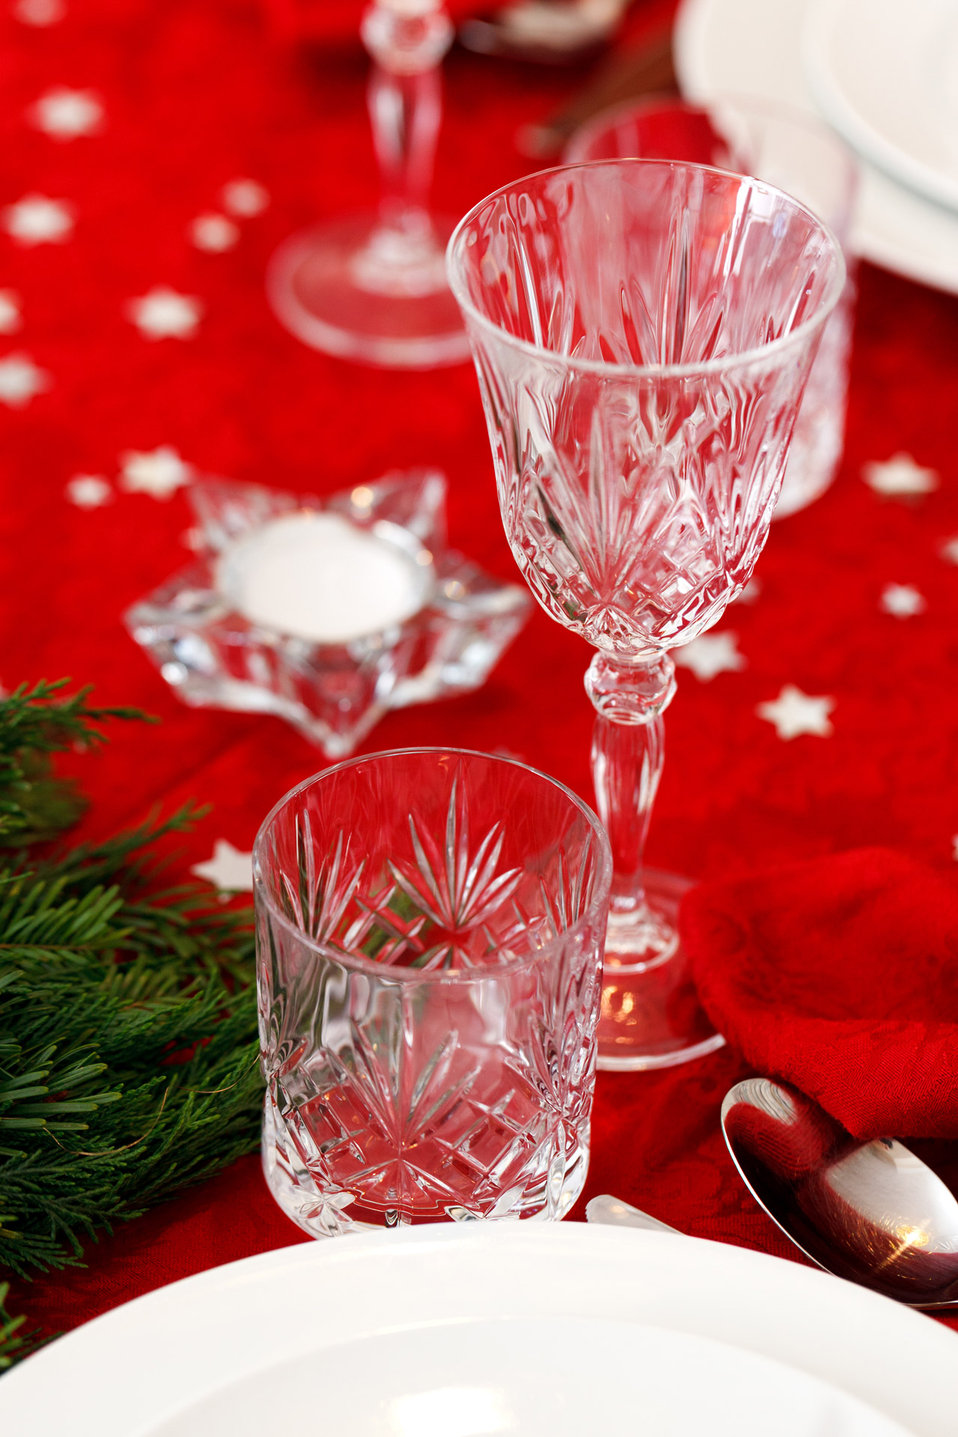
Glasses on christmas table

Fancy glasses on a christmas table.